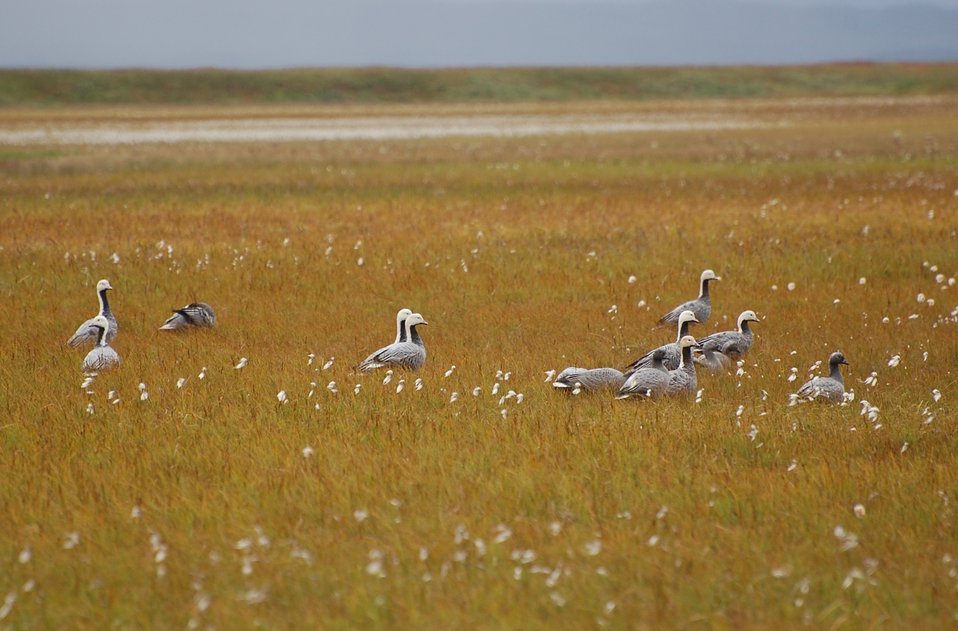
Emperor Geese

Izembek National Wildlife Refuge